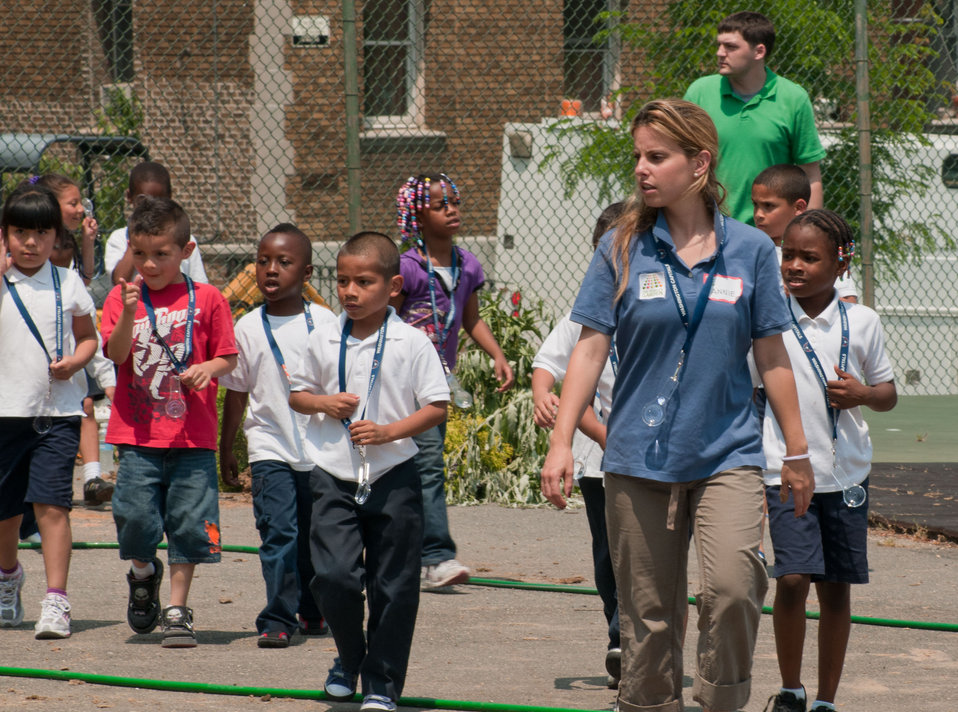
U.S. Department of Agriculture Outreach and Education Coordinator Annie Ceccarini guides William B. Powell Elementary School students through various project areas to explain what is being made and what it will provide for them in their school’s People’s Garden, in Washington, DC, on Thursday, June 9, 2011. Volunteers from U.S. Department of Agriculture People’s Garden Executive Master Gardener program and Washington Capitals hockey organization, along with defenseman Jeff Schultz, and mascot Slapshot transformed a grassy corner of the school playground into a habitat garden and outdoor learning area. Executive Master Gardeners led the volunteer project teams. The Washington Capitals donated new tools; tool shed; garden materials; lunch; most of the volunteers and more. The completed projects included a walking path; tiling of garden plots; planting a bird habitat garden, pollinator garden and native grasses; caterpillar and butterfly plaques; hummingbird and bat house, and tool shed. The garden will later include a picnic area, outdoor classroom, hummingbird garden, Monarch watch garden, native bee garden, and birdbath. USDA challenges its employees to establish People's Gardens at USDA facilities worldwide or on this case, help communities create gardens. People's Gardens vary in size and type, but all have a common purpose - to help the community and the environment.